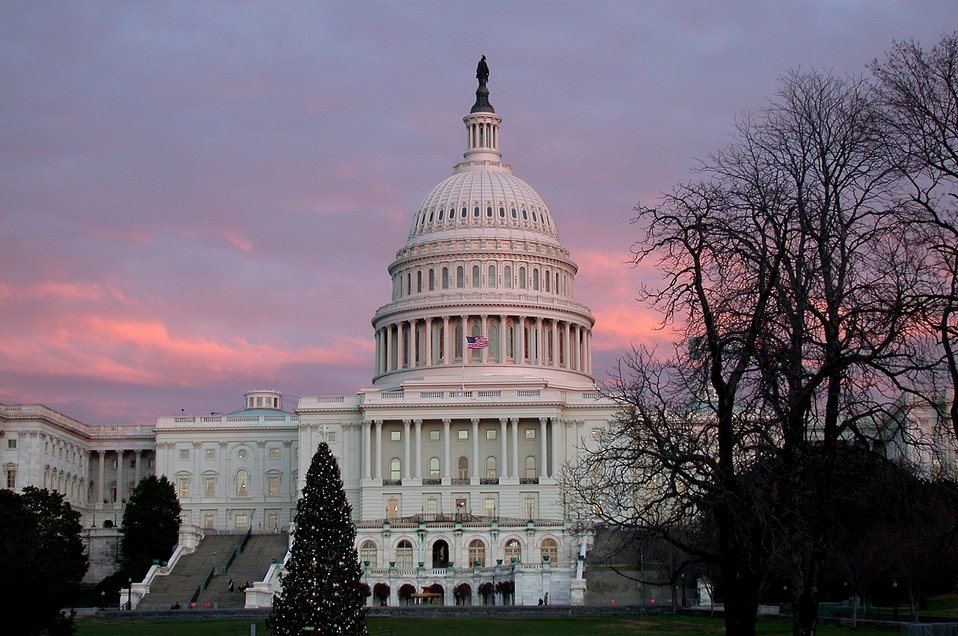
United States Capitol building.